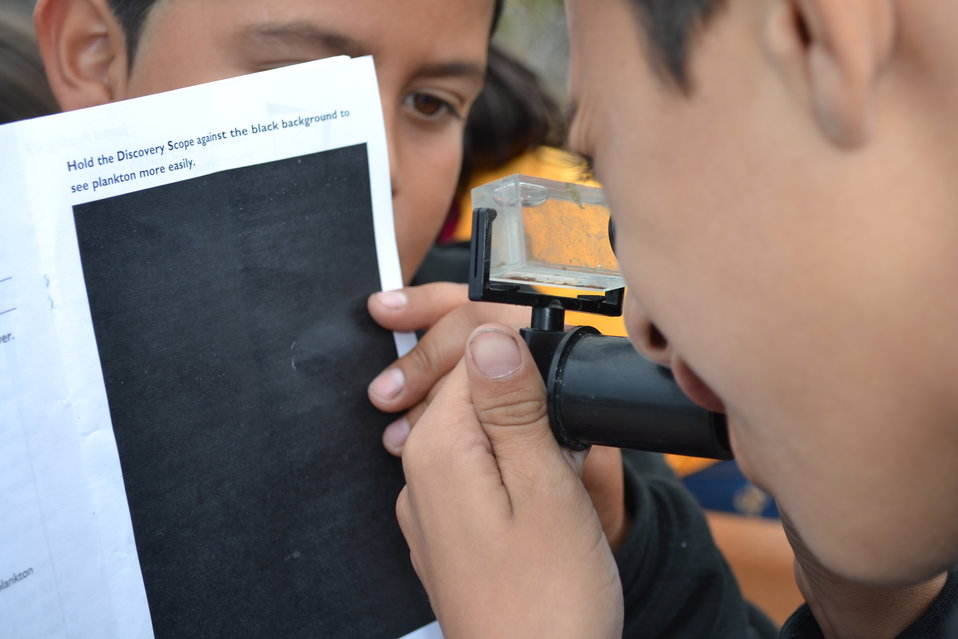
It takes a partner to help find plankton!

Students looking for moving plankton (Zooplankton) or drifting plankton (phytoplankton)